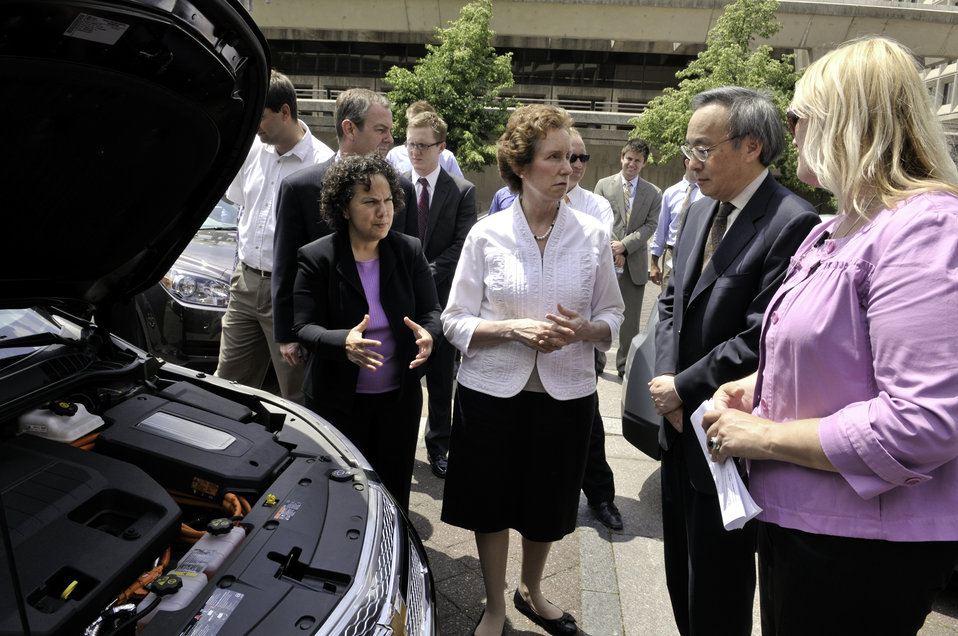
Clean Fleets Announcement 13 of 14

Martha Johnson, General Services Administrator, Sec. Steven Chu, US Department of Energy, and Nancy Sutley, White House Council on Environmental Council Chairwoman, speaking with a representative from Chevrolet.